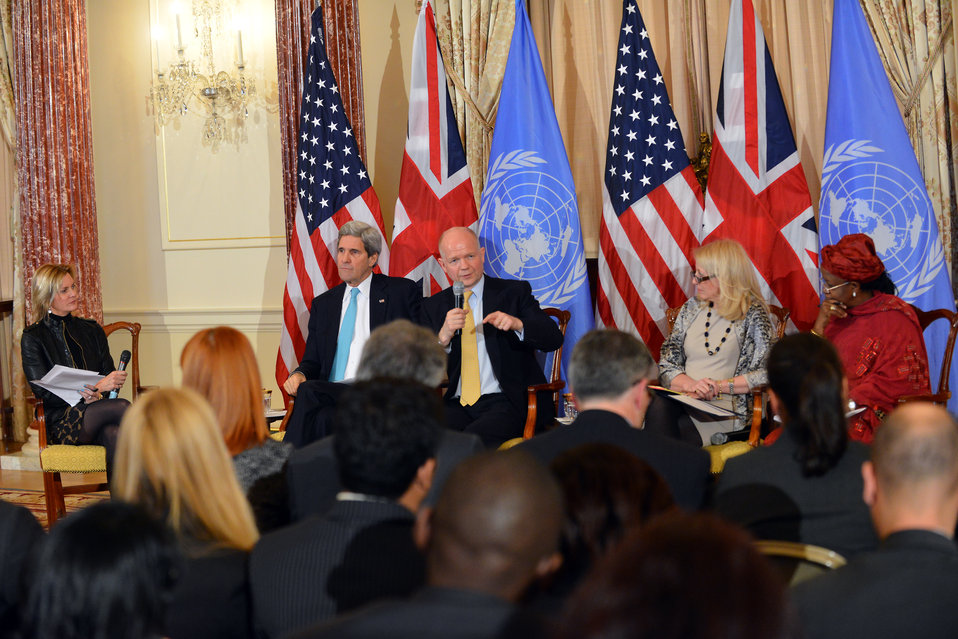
Secretary Kerry and UK Foreign Secretary Hague Participate in a Discussion on Efforts To Prevent and Respond to Sexual Violence in Conflict

U.S. Secretary of State John Kerry and U.K. Secretary of State for Foreign and Commonwealth Affairs William Hague host a panel on ending and preventing sexual violence in conflict situations at the U.S. Department of State in Washington, D.C., on February 25, 2014. The discussion is moderated by Katherine Weymouth, Chief Executive Officer and Publisher of The Washington Post. Zainab Hawa Bangura, UN Special Representative of the Secretary General on Sexual Violence in Conflict, and Catherine Russell, U.S. Ambassador-at-Large for Global Women’s Issues, also participate in the discussion.